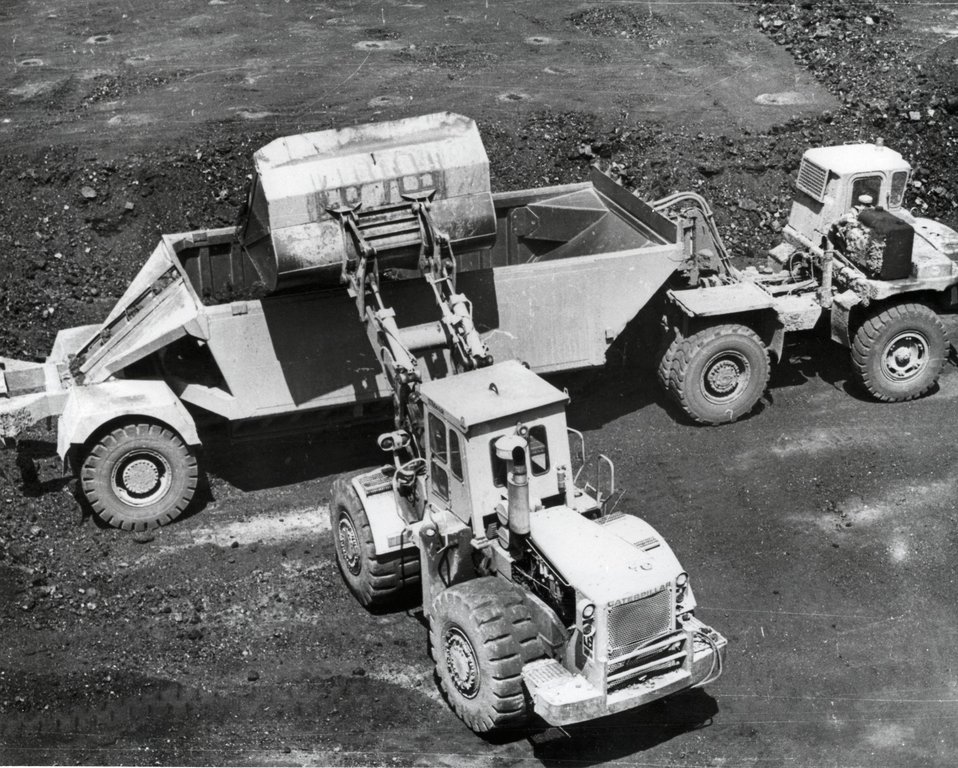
Looking like toys, the big loader fills a Resource Exploration and Mining, Inc.'s coal hauler for the trip to the plant of Energy Development Co. Resource provided about 60 percent of the over a million tons produced by Energy Development from its Hanna, Wyoming mines in 1974. c. 1976